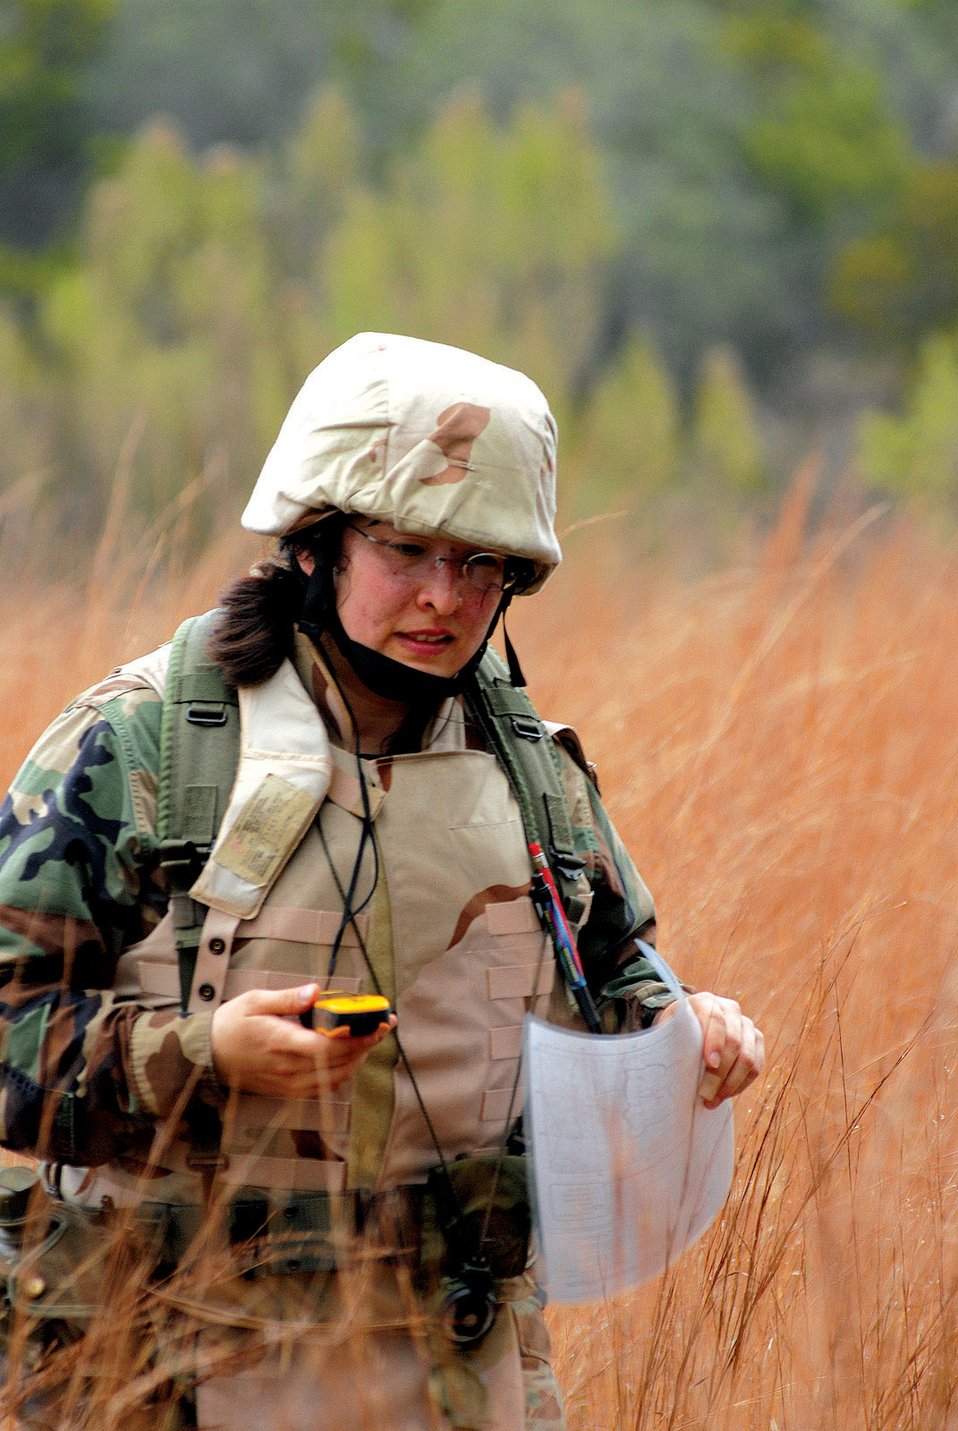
Battlefield training makes warriors out of Airmen

Maj. Victoria Nemmers from Langley Air Force Base, Va., uses a global positioning system Dec. 19 during the land navigation portion of the Common Battlefield Airman Training Bridge course held at Camp Bullis, Texas. Students use maps and compasses to find their way to a designated point and then use a GPS to find their way back.